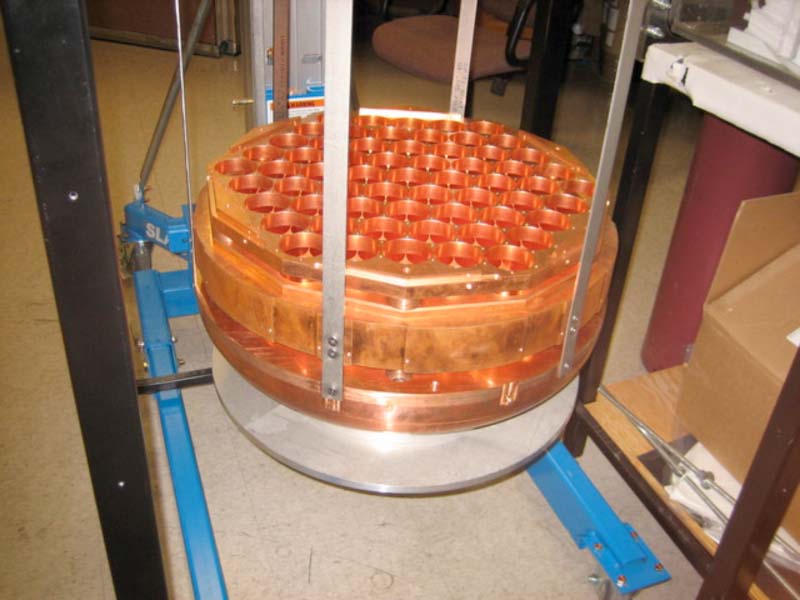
Shown is a side view of the LLNL-designed and built Copper Photomultiplier tube mouring structure, a key component the Large Underground Xenon(LUX) Detector, located at SANFORD UNDERGROUND RESEARCH FACILITY (SANFORD LAB)